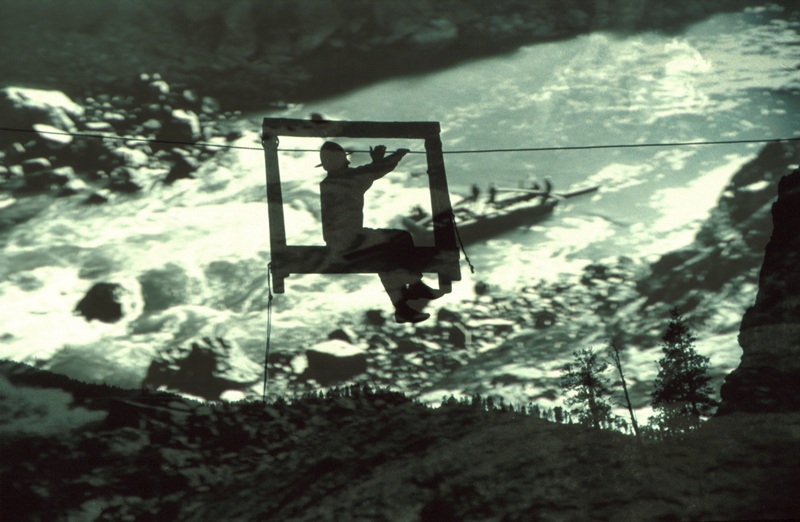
Lower Salmon River Upper Columbia-Salmon Clearwater District